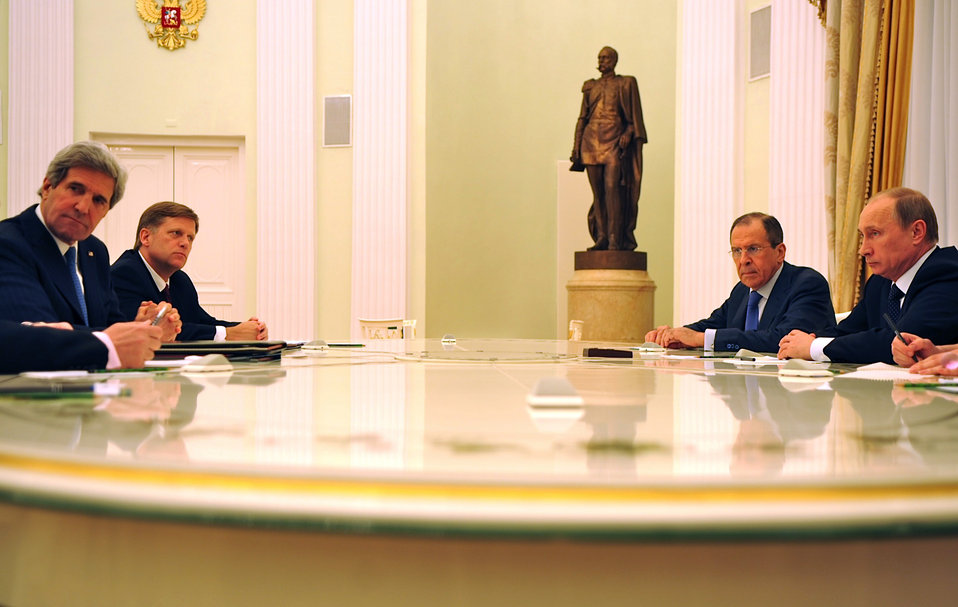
Secretary Kerry Meets With Russian President Putin and Foreign Minister Lavrov

U.S. Secretary of State John Kerry, accompanied by U.S. Ambassador to Russia Michael McFaul meets with Russian President Vladimir Putin and Russian Foreign Minister Sergey Lavrov in Moscow, Russia, on May 7, 2013.